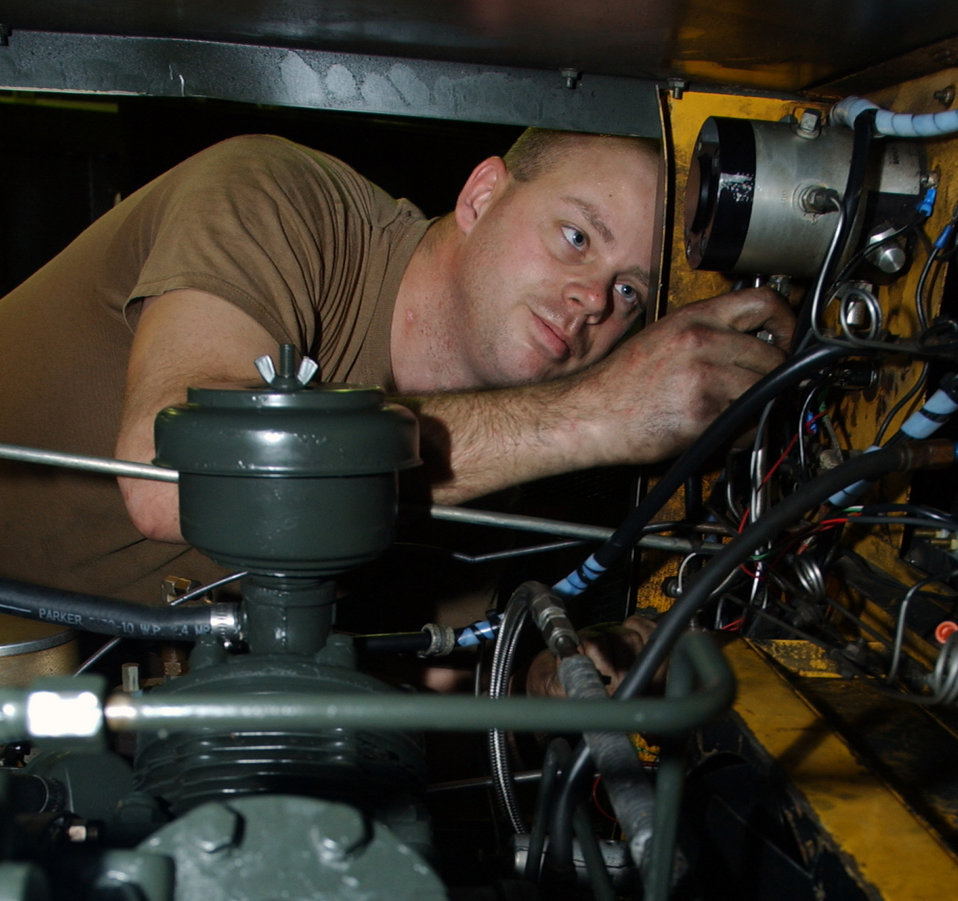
High pressure

ROYAL AIR FORCE LAKENHEATH, England -- Staff Sgt. Earl Klinglesmith installs a high-pressure line on a regulator here April 6. Sergeant Klinglesmith is an aircraft ground equipment craftsman with the 48th Equipment Maintenance Squadron. The high-pressure line allows the regulator to inflate tires on jets when nitrogen is not available.